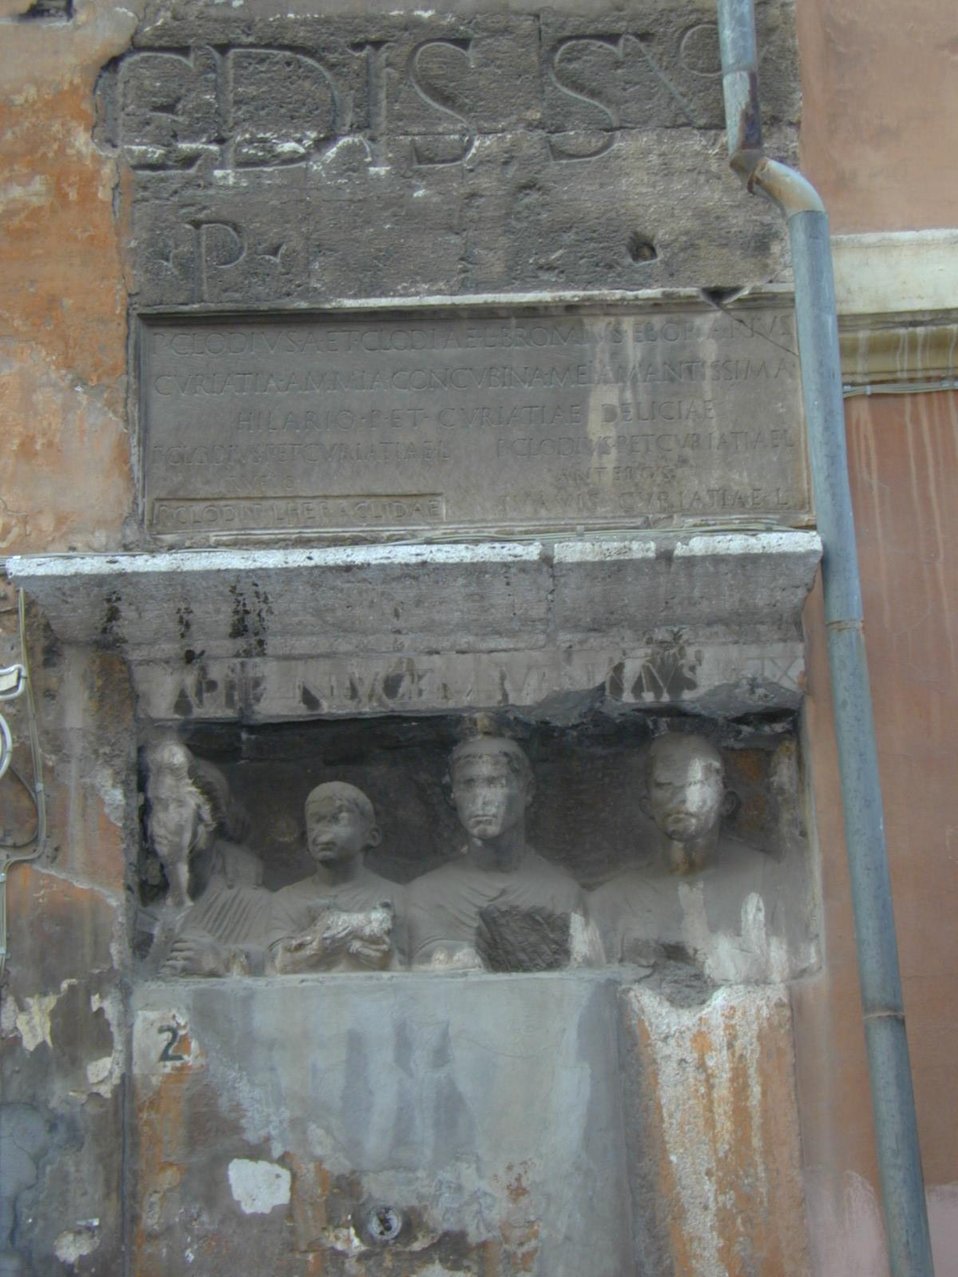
11 portico d ottavia - casa Manili 1 000205